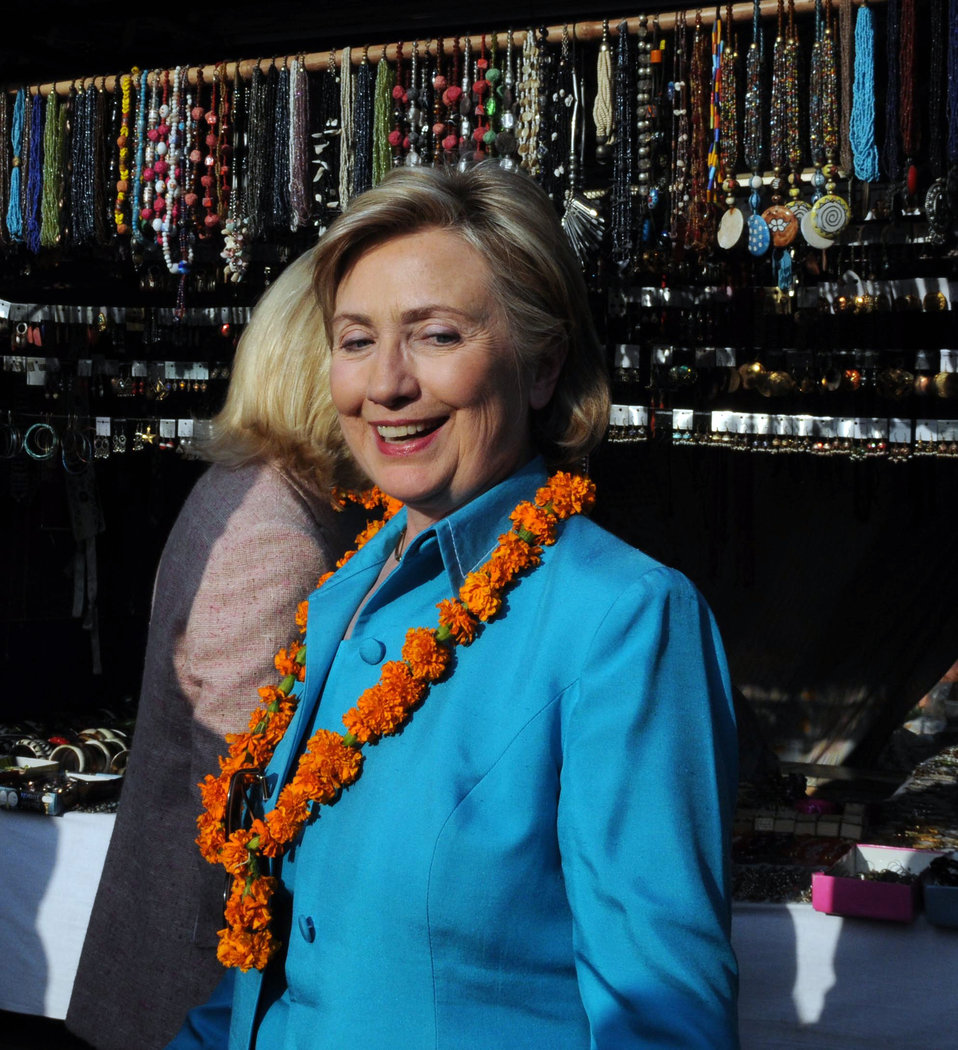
Secretary Clinton Visits Local Shops in New Delhi

U.S. Secretary of State Hillary Rodham Clinton shops at Dilli Haat, New Delhi, India July 19, 2009.